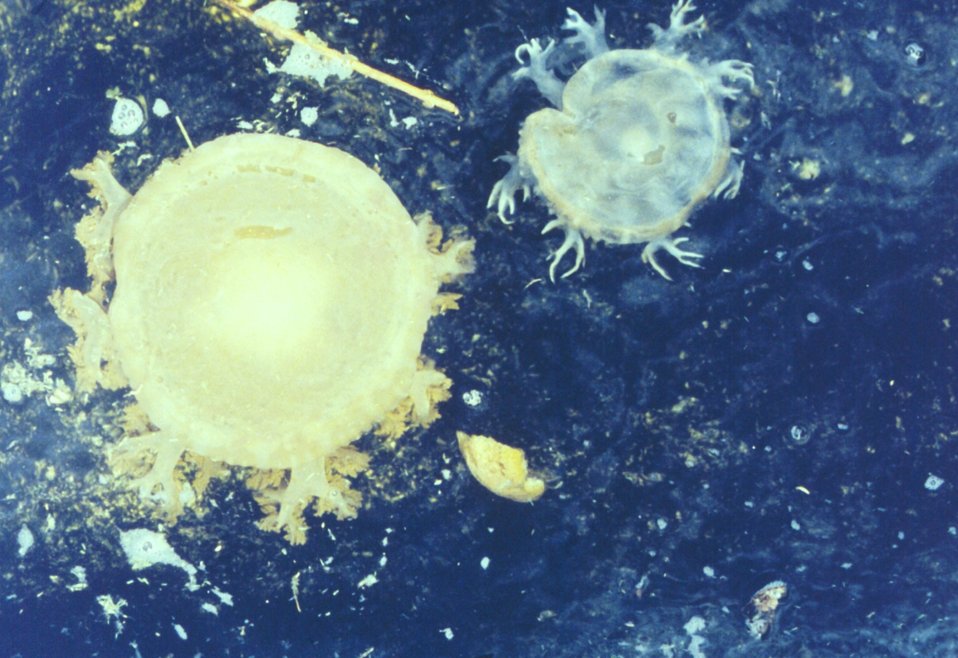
Possibly looking at the mouth end of holothurians.